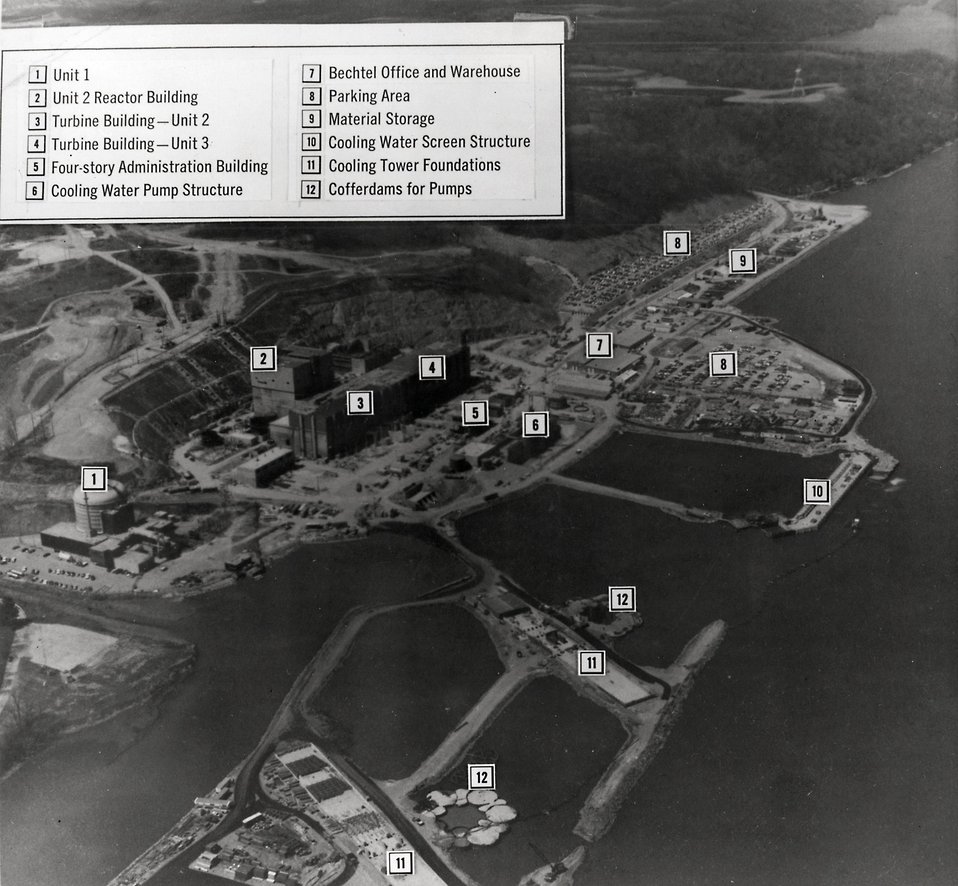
Construction work continues on Units 2 and 3 of the Peach Bottom (Pa.) Atomic Power Station-- at 1,065 Mwe. a piece, two of the largest nuclear units ever undertaken. Circa 1972.